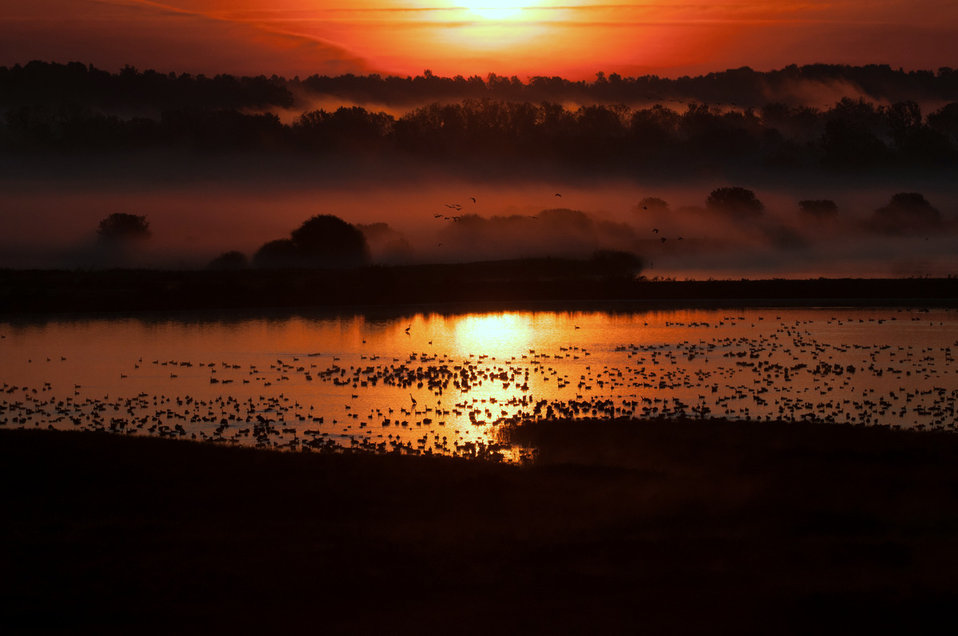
Sunrise over Knox Marsh

Photographed at Montezuma National Wildlife Refuge.